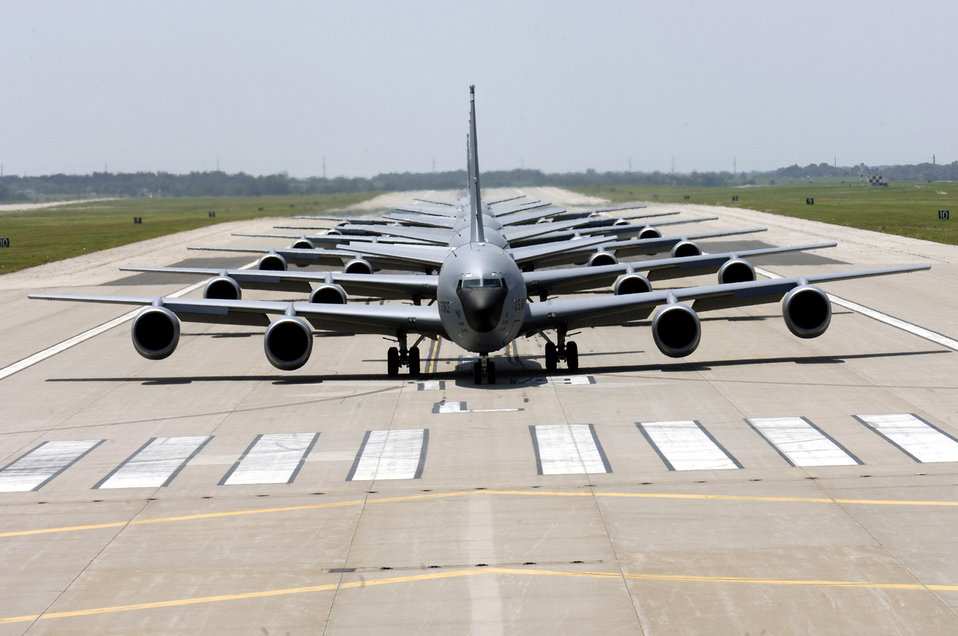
Elephant walk

Six KC-135 Stratotankers demonstrate the elephant walk formation as they taxi down a runway right behind each other during a generation exercise Aug. 5 at McConnell Air Force Base, Kan. The exercise showcased McConnell AFB aircrews' capability to prepare a flight and take off within minutes of being notified of a mission.